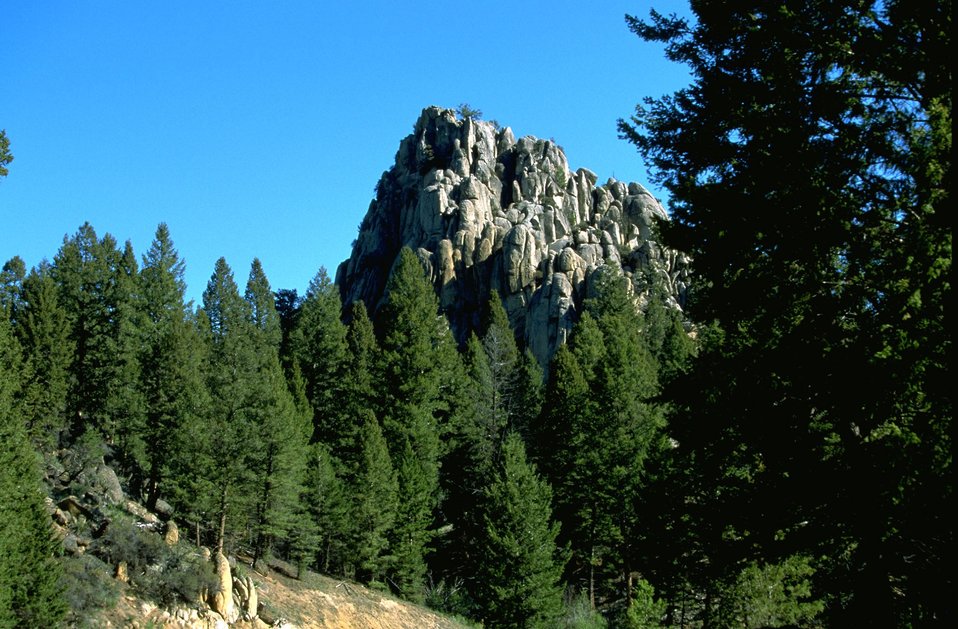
View of rock formation above the fir trees